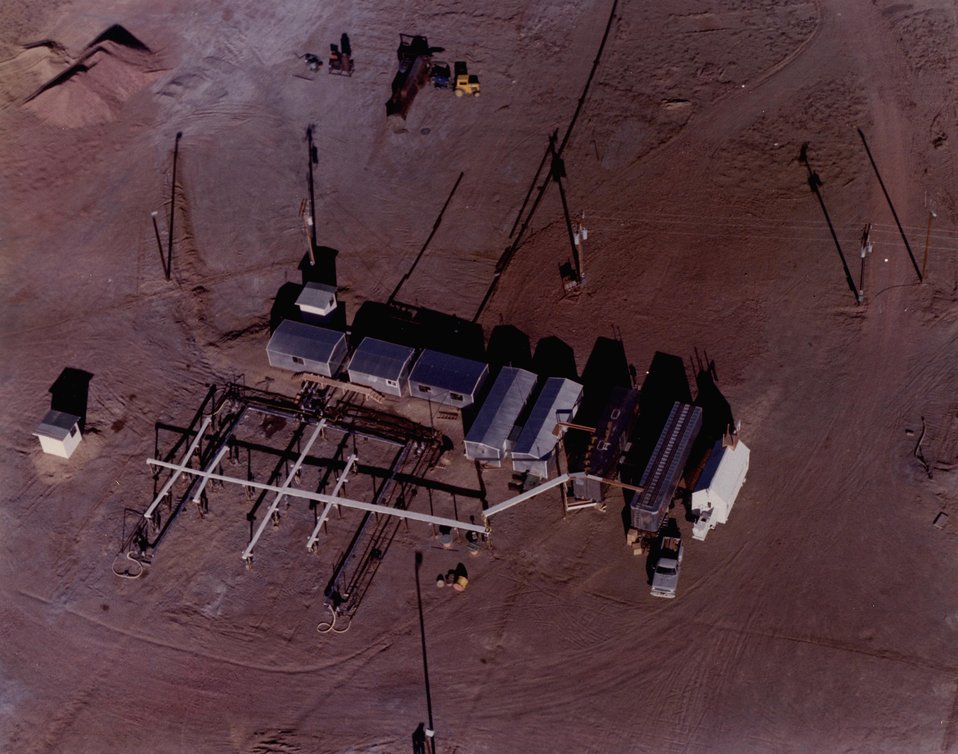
Coal gasification site near Hanna, Wyoming, where in situ burning of an underground coal seam produced combustible gas at the surface.